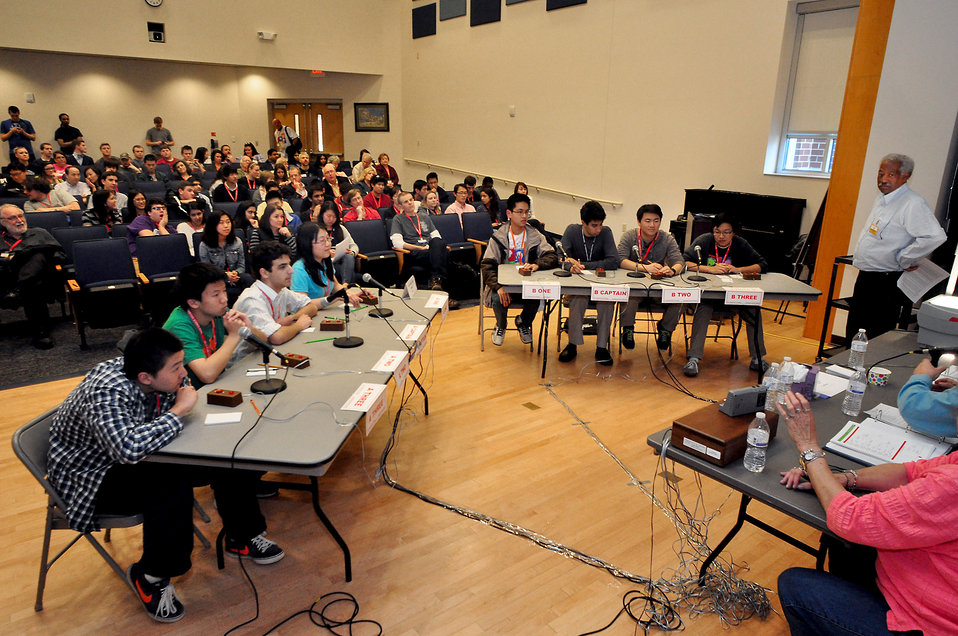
Farragut and Oak Ridge 2014 TN DOE Science Bowl

DOE photo Lynn Freeny 2-22-2014 Pellissippi State Blount Campus